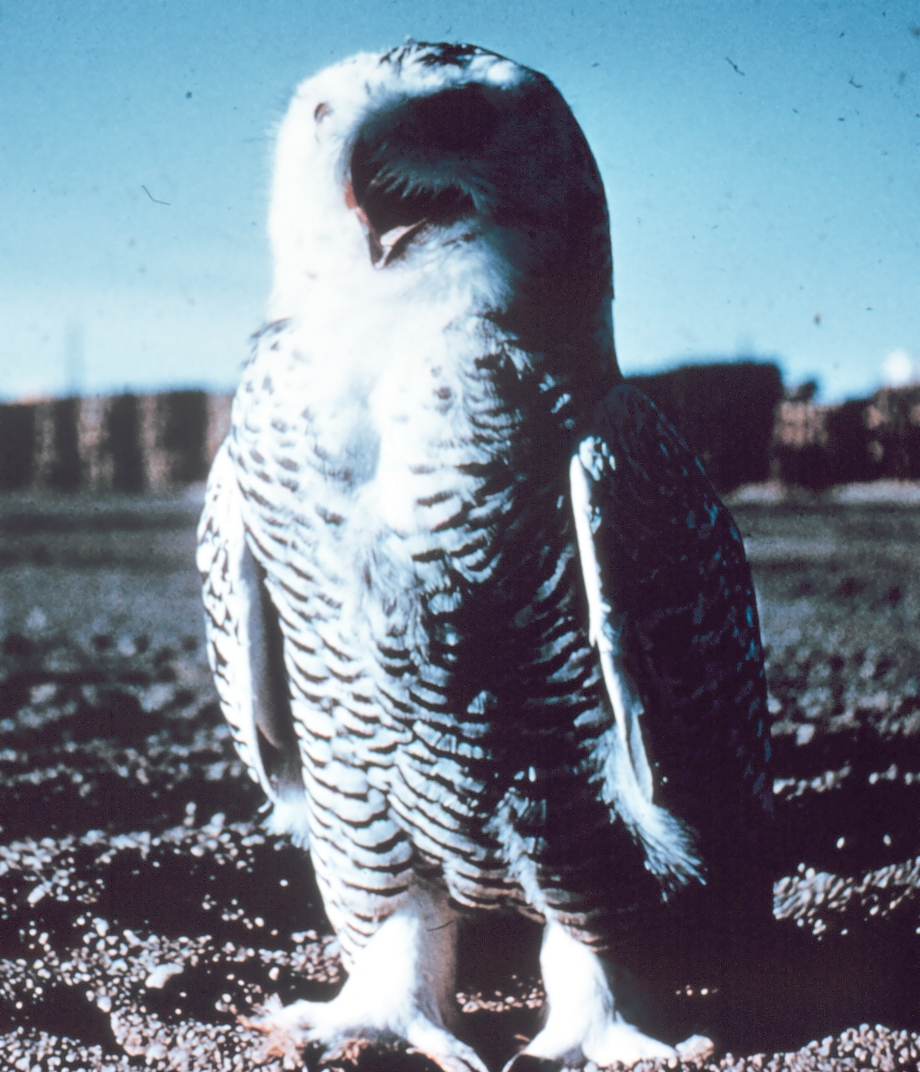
Snow owl.